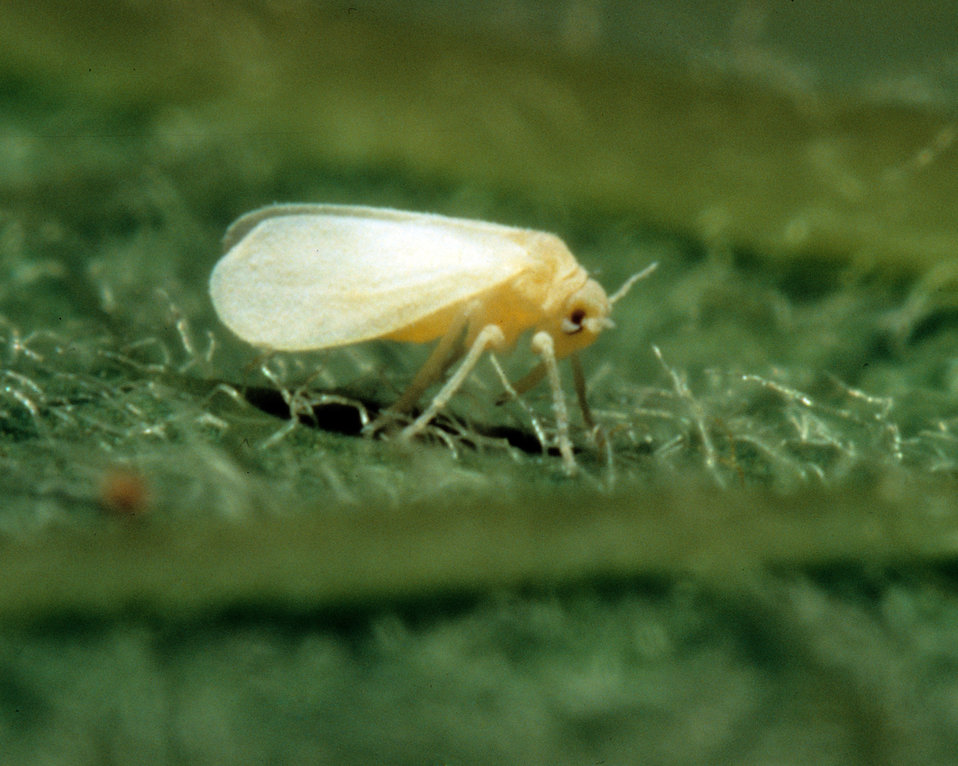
A Sweetpotato whitefly (also known as the Silverleaf whitefly) and is a serious agricultural pest and is considered an invasive species. The whitefly feeds on agricultural crops such as tomatoes, squash, broccoli, cauliflower, cabbage, melons, cotton, carrots, sweet potato, cucumber, and pumpkin, and ornamental plants such as poinsettia, crepe myrtle, garden roses, lantana, and lilies. The whitefly was first found in the United States in poinsettia crops in Florida during the mid-1980s. It was found to have moved to tomatoes, other fruit and vegetable crops less than a year later and within five years had caused over $100 million in damage to the Texas and California agriculture industries.